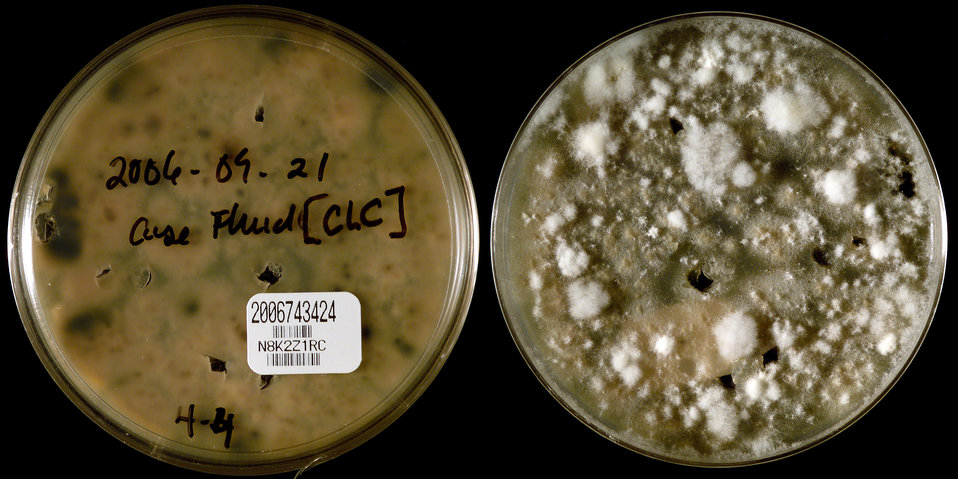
This image depicted two sides of a Petri dish, which had been inoculated with a specimens retrieved from the fluid inside a contact lens case, from a Pennsylvania Fusarium keratitis-patient, and had subsequently grown a filamentous colony of Fusarium solani Species Complex (FSSC Group# 3) fungal organisms. The type of agar medium in the case of this specimen was Sabouraud Dextrose (SAB). While it is not unusual for Fusarium to cause keratitis, it was the number of affected individuals, which had increased dramatically, predominantly in persons wearing contact lenses, that had warranted this epidemiologic study. The laboratory received cultures which came from two sources: Fusarium spp. isolated from the eyes of patients with fungal keratitis, and cultures from contact lenses, cases and/or lens solution.